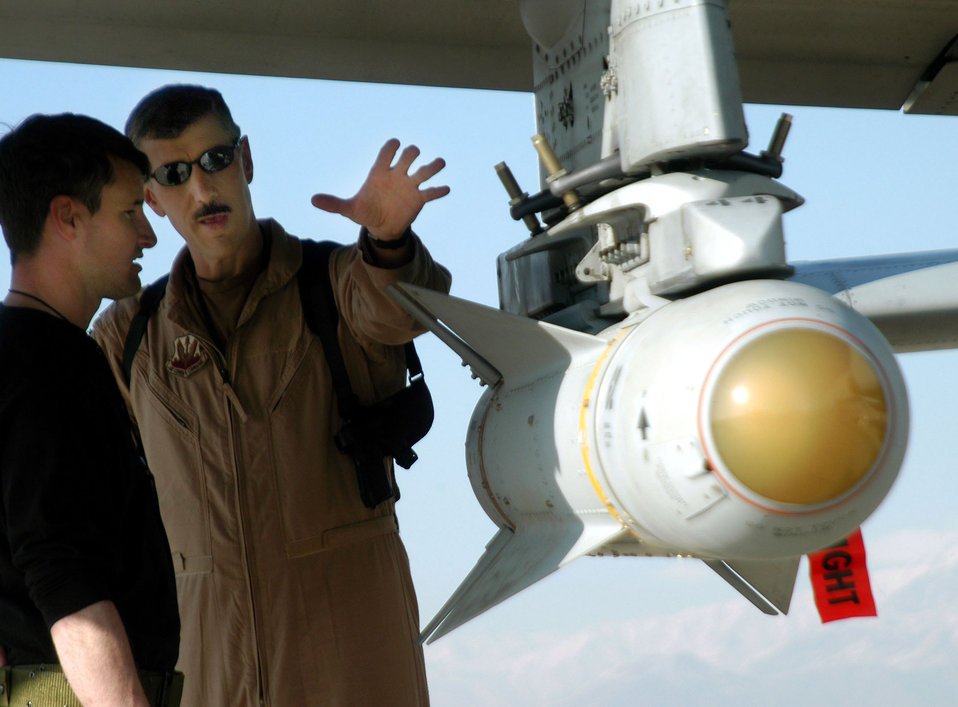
Hog heaven

BAGRAM AIR BASE, Afghanistan -- Lt. Col. Dan of the 104th Fighter Squadron explains the capabilities of an A-10 Thunderbolt II to Tech. Sgt. Donald Richardson, a heating and ventilation technician with the 682nd Air Support Operations Squadron here. The A-10 pilots conduct Warthog tours on Mondays and Fridays for Air Force Village residents here to promote a better understanding of the A-10's mission and capabilities.